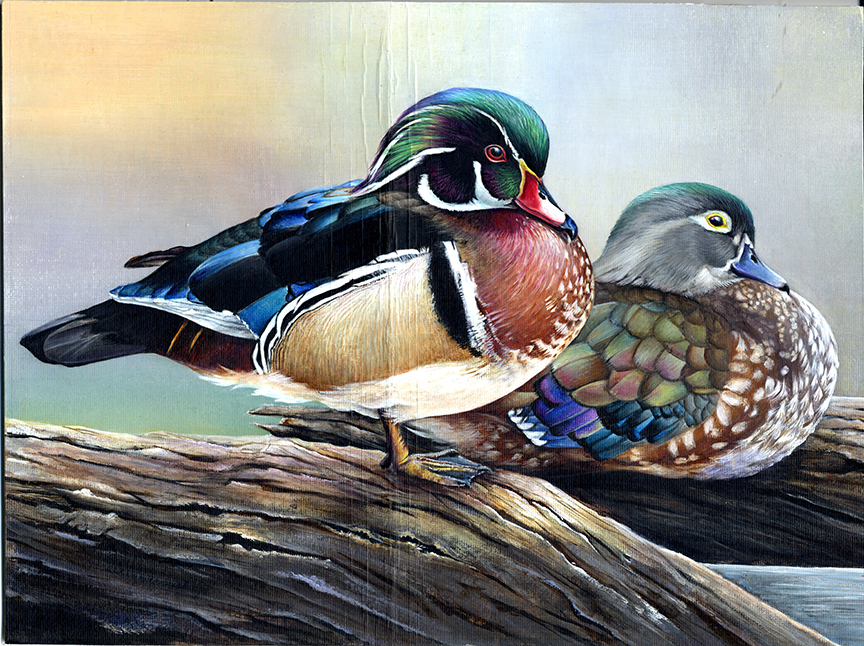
JRDuck2013TN

2013 Junior Duck Stamp Best of Show-Tennessee